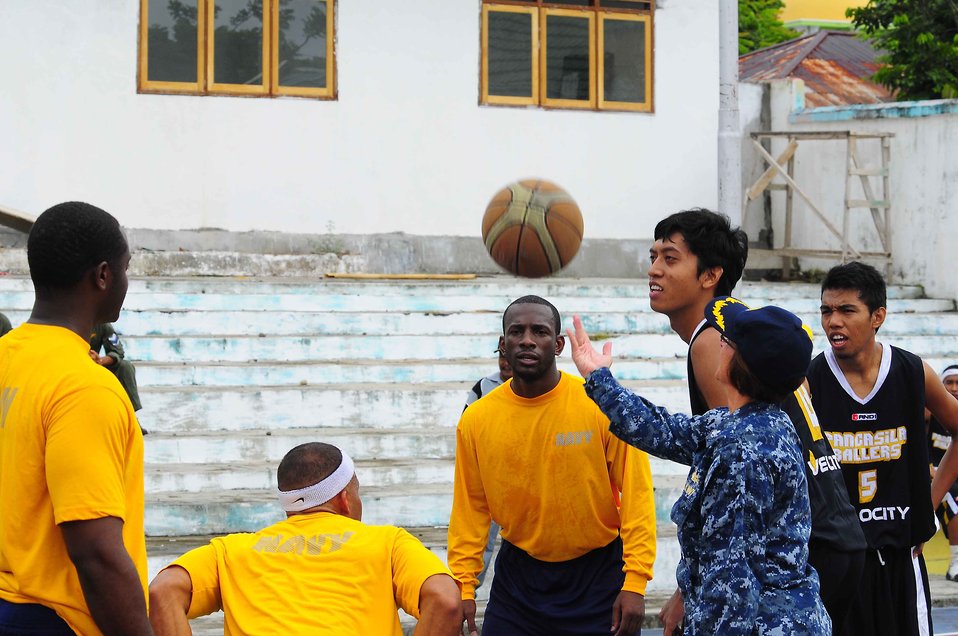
PP 2010 Commander Capt. Franchetti Tosses the Opening Jump Ball

Pacific Partnership 2010 Commander Capt. Lisa M. Franchetti tosses the opening jump ball during a game of basketball between Pacific Partnership 2010 participants and the Pangasila Ballers team in Ternate, Indonesia, on July 21, 2010. Pacific Partnership 2010 is the fifth in a series of annual U.S. Pacific Fleet endeavors conducted in Indonesia as a disaster relief exercise aimed at strengthening regional relationships with host and partner nations in Southeast Asia and Oceania.